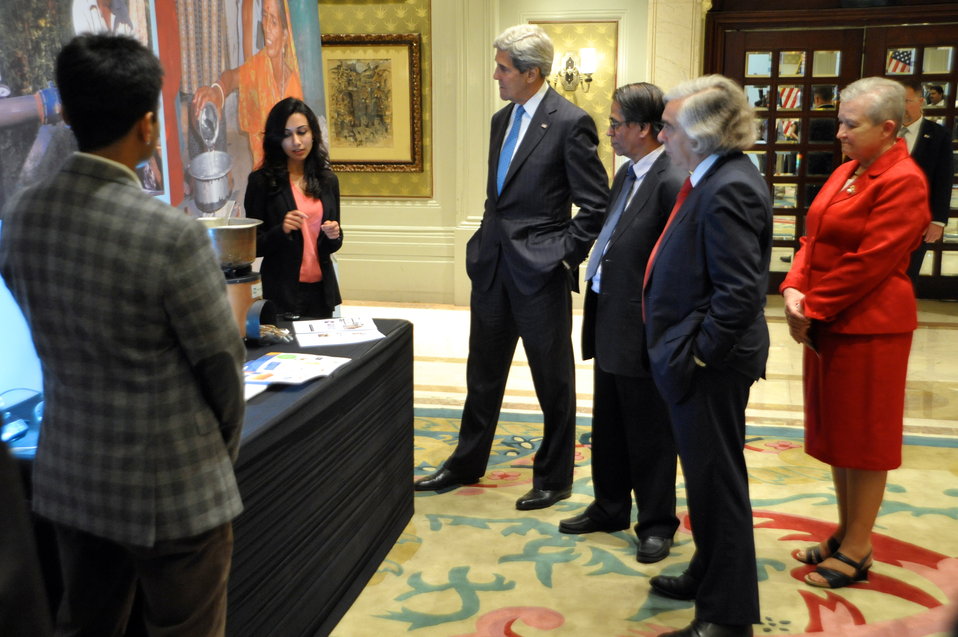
Secretary Kerry Attends an India Tech Expo

U.S. Secretary of State John Kerry, U.S. Secretary of Energy Ernest Moniz, and U.S. Ambassador to India Nancy Powell listen as a young entrepreneur describes her camp stove product during an expo in New Delhi, India, on June 24, 2013